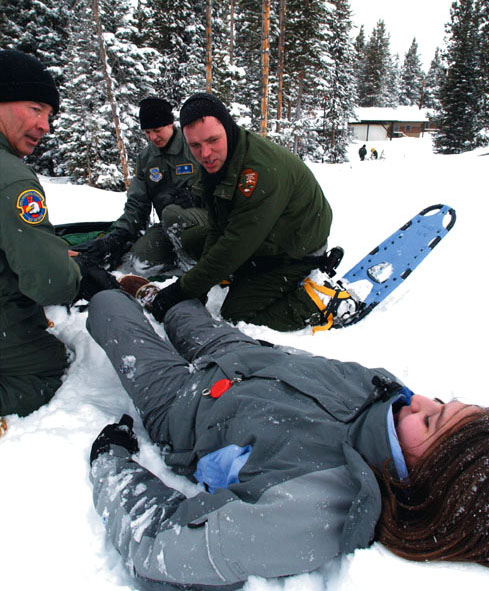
Snowy rescue

YELLOWSTONE NATIONAL PARK -- Senior Master Sgt. Johnny Cupp (left) and 1st Lt. Stacy Gartrell, officer in charge of the 445th Aeromedical Staging Squadron's National Park Service/EMT training program, assess a